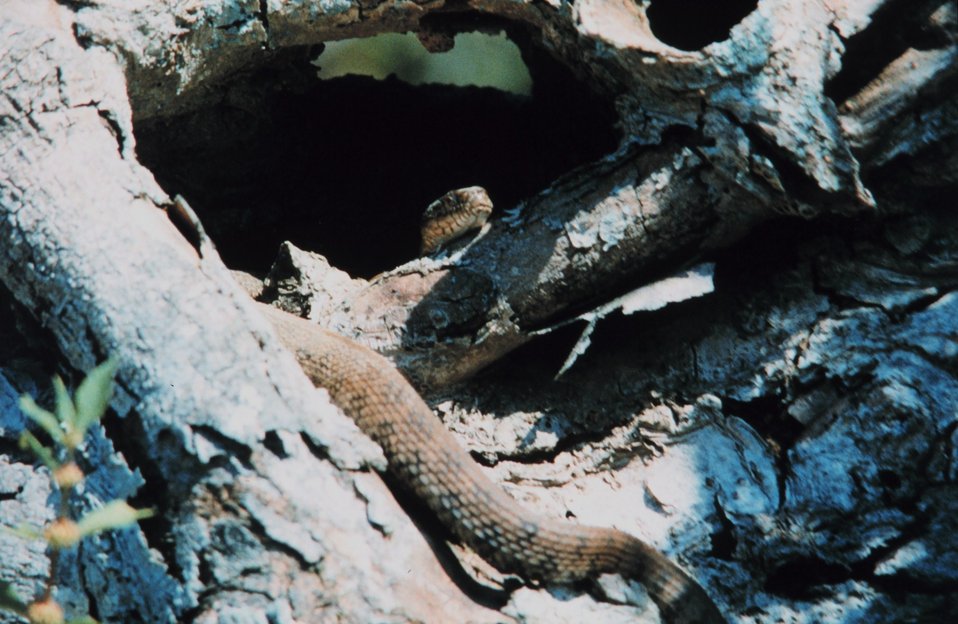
The Northern Water Snake - Nerodia sipedon sipedon - a common, non-venoemous water snake. Often mistaken for the Eastern Cottonmouth or Water Mocassin, Agkistrodon piscivorus. The known range for the latter does not extend further north than the Great Dismal Swamp.